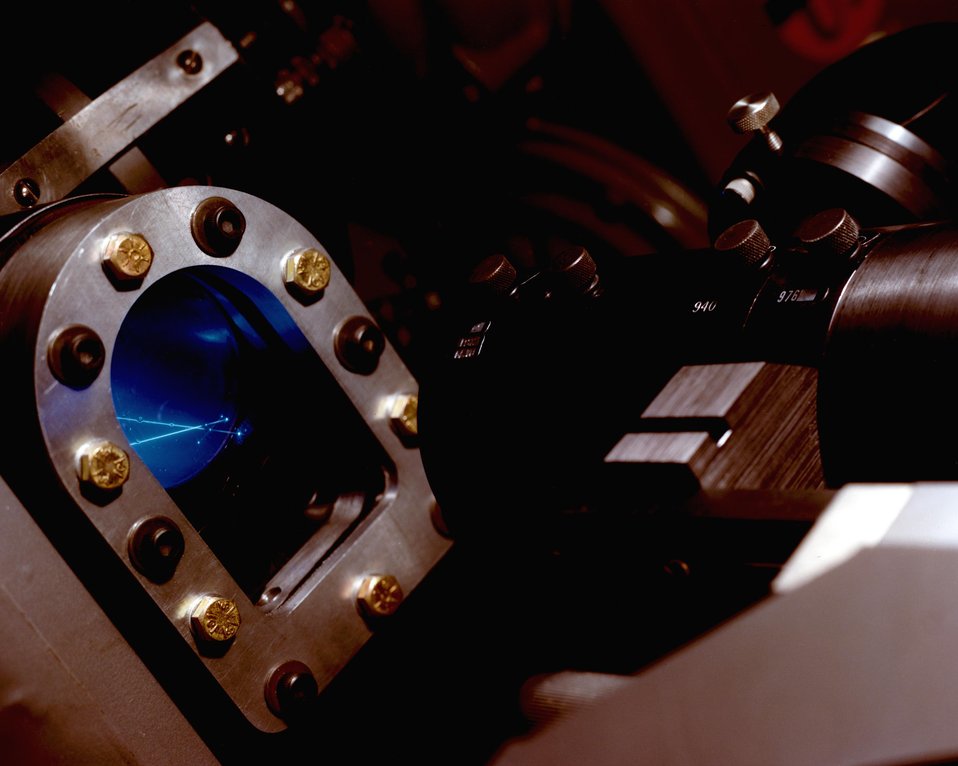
LASER DOPPLER VELOCIMETRY (LDV) EXPERIMENT ON COMBUSTION CHAMBER AND WINDOWED HEAD OF ENGINE TO MEASURE TURBULENCE.

SCIENTISTS USE ADVANCED LASERS AND COMPUTERS AT THE 50,000 SQUARE FOOT, FOUR-BUILDING COMBUSTION RESEARCH FACILITY TO STUDY EXACTLY HOW AND WHY FUELS BURN. IN THE LABORATORY BUILDING, SPECIAL LASER SYSTEMS WITH BEAMS ARE DISTRIBUTED TO 14 INDIVIDUAL LABORATORIES. EACH LABORATORY IS SERVED BY A MINICOMPUTER WHICH IS CONNECTED TO A CENTRAL DATA SYSTEM. IN ADDITION TO BENCH-TOP FLAME STUDIES, THE FACILITY HOUSES SEVERAL MAJOR COMBUSTION EXPERIMENT LABS, INCLUDING FIVE OPTICALLY PORTED RESEARCH ENGINES, A COMPUTER-CONTROL- LED COMBUSTION BOMB, AND LOW-PRESSURE FLAME, COAL FLAME, AND TURBULENT FLAME LABORATORIES. THESE STUDIES COULD LEAD TO THE DESIGN OF HEAT ENGINES AND ENERGY SYSTEMS THAT BURN FUEL MORE EFFICIENTLY WHILE CREATING LESS POLLUTION.